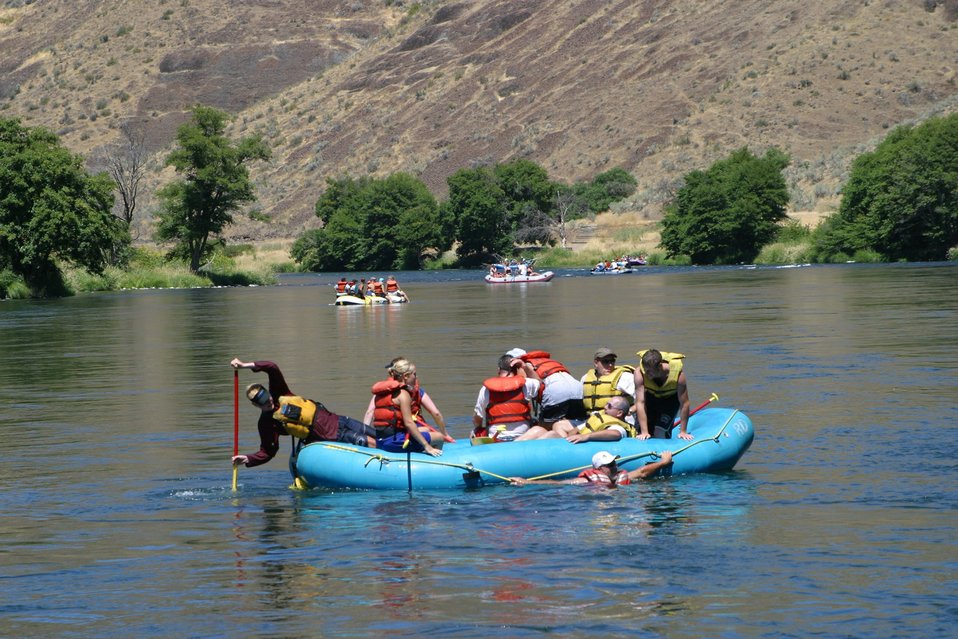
Looking down river from the Blue Hole accessible floating platform.